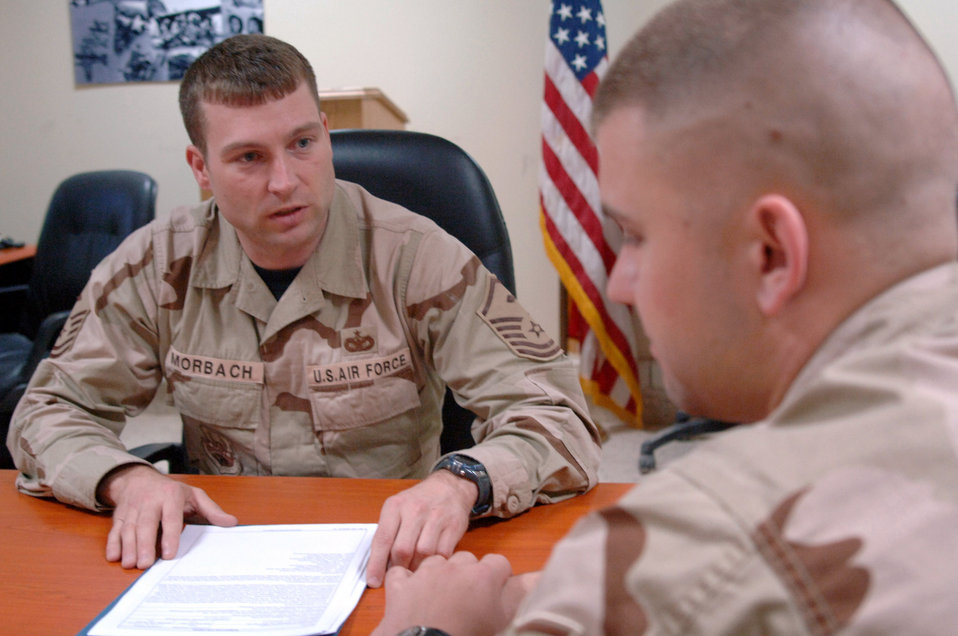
Single-parent dads deal positively with deployment

Master Sgt. James Morbach (left) and Senior Airman Shea Dodson review award packages in the 732nd Expeditionary Mission Support Group conference room Feb. 21 at Balad Air Base, Iraq. Sergeant Morbach and Airman Dodson have revieved more than 200 Air Force Form 1206s in the last few weeks. Sergeant Morbach is the 732nd Expeditionary Security Forces Squadron first sergeant. Airman Dodson is assigned to the 732nd Expeditionary Security Forces Squadron commander's support staff.